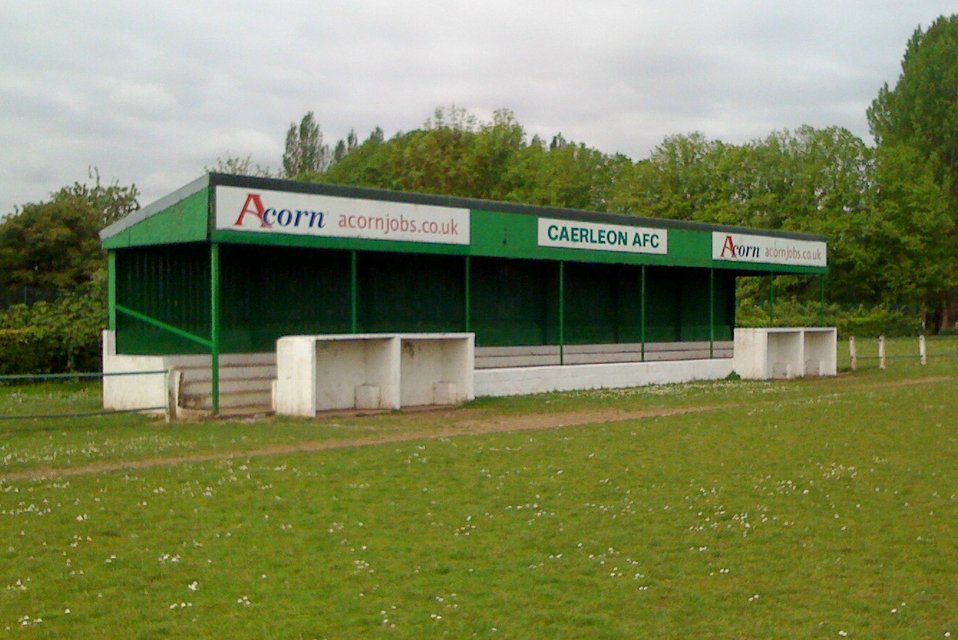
Caerleon Football Club
Category:Pictures of Caerleon